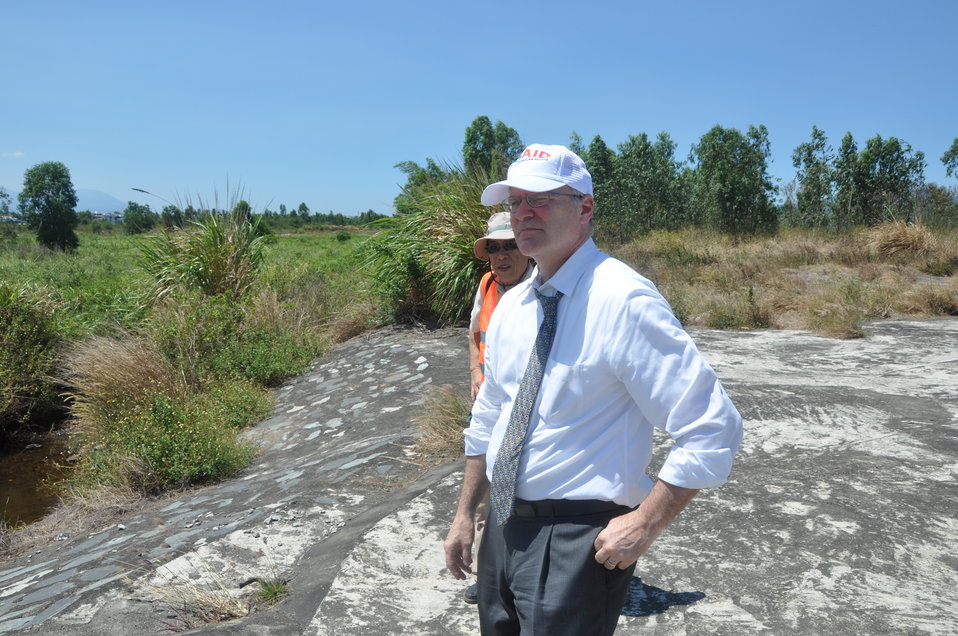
USAID Deputy Administrator Donald Steinberg and delegation visit Danang Airport

USAID Deputy Administrator Donald Steinberg Visits Vietnam